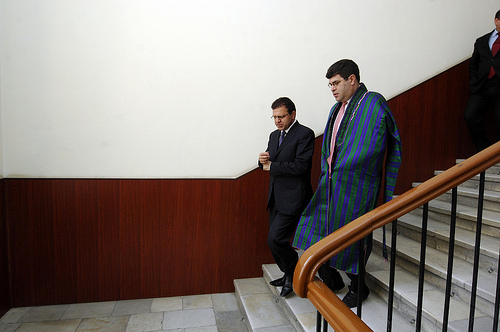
Afghan Finance Minister Zakhilwal and Deputy Secretary Wolin after their meeting

Afghan Finance Minister Zakhilwal and Deputy Secretary Wolin, wearing a traditional Afghan robe, before a working lunch in Kabul on Thursday, February 11.